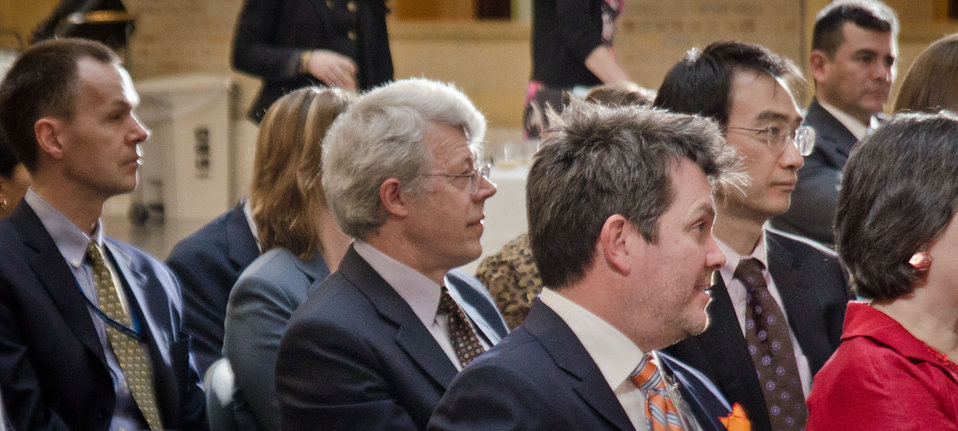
United States Department of Agriculture (USDA) Foreign Service Oath of Office Ceremony, with representatives from Colombia, China Peru, and Japan in attendance at the U.S. Department of Agriculture on Thursday, March 15, 2012.